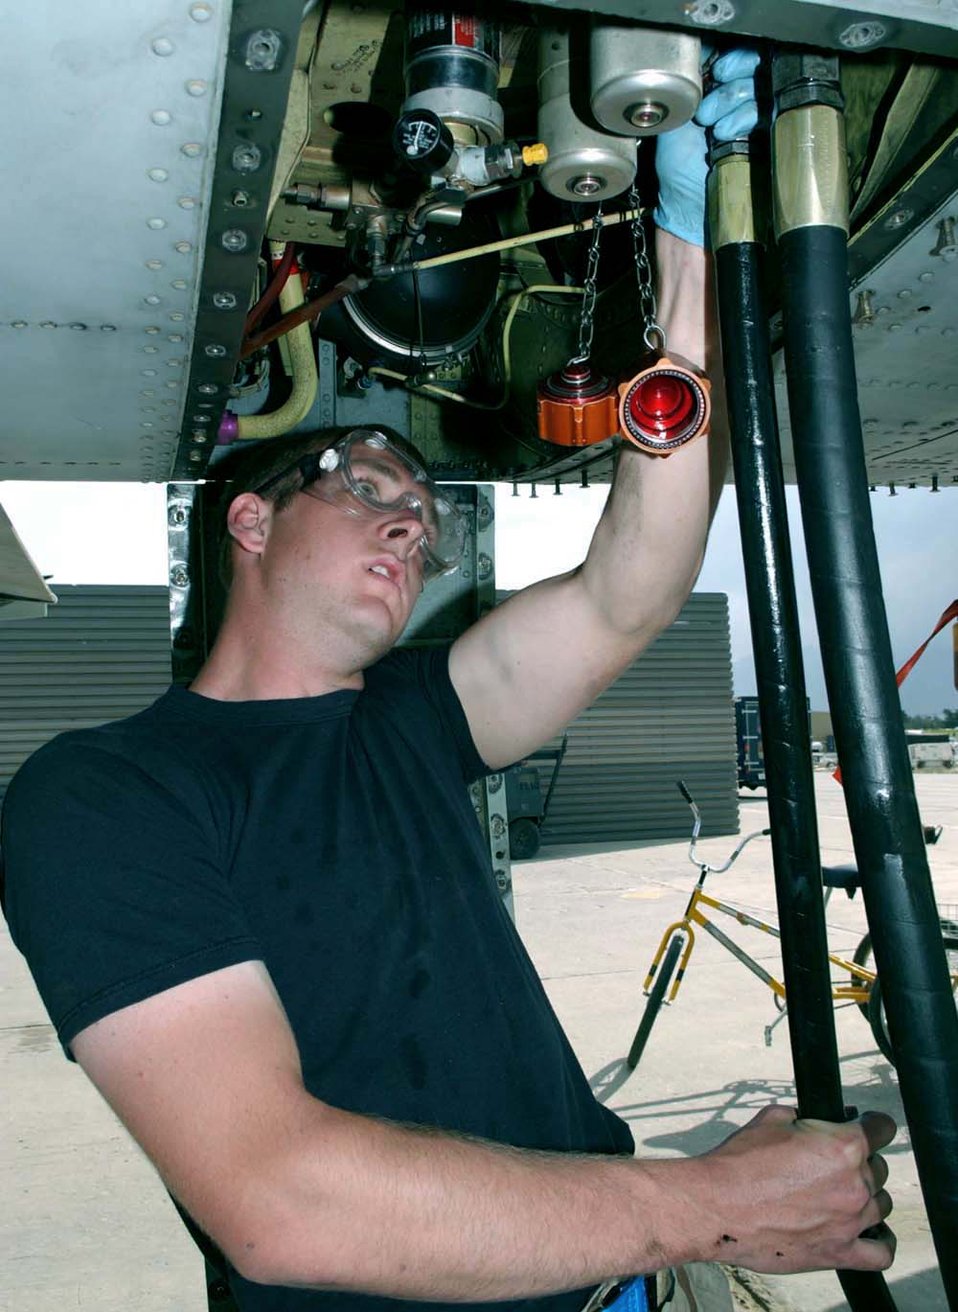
Testing 1, 2, 3

BAGRAM AIR BASE, Afghanistan -- Staff Sgt. Shaun Loeffler hooks up a hydraulic test stand to an A-10 Thunderbolt II here. The stand is used to check the aircraft's flight control system. Sergeant Loeffler is crew chief assigned to the 455th Expeditionary Aircraft Maintenance Squadron and is deployed from Eielson Air Force Base, Alaska.